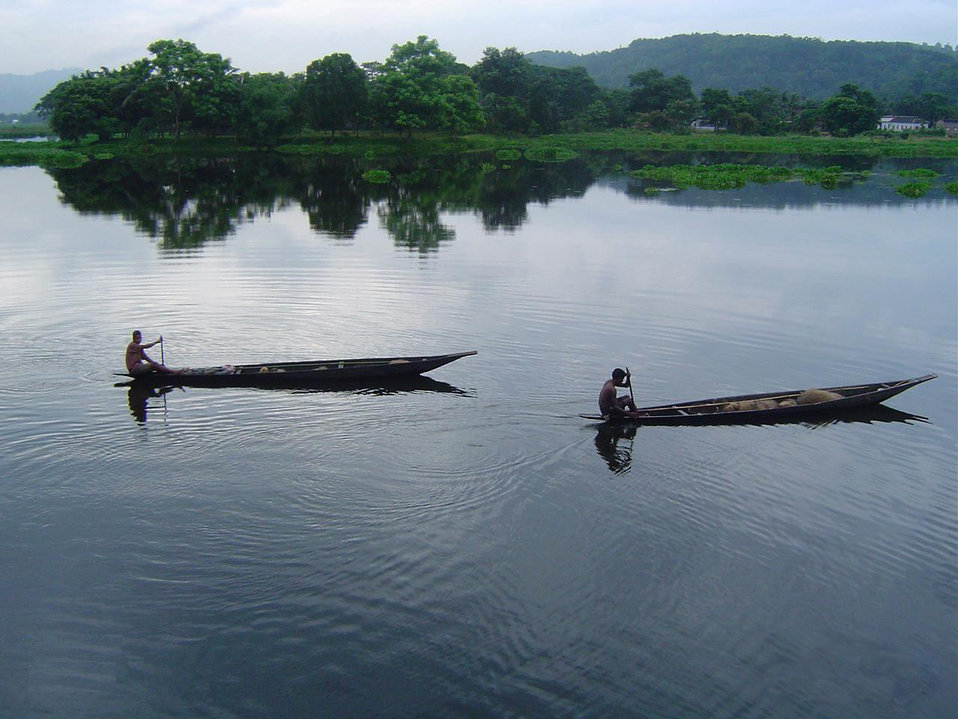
Assam Engineering College, A view of Deepor Beel in the vicinity of AEC.